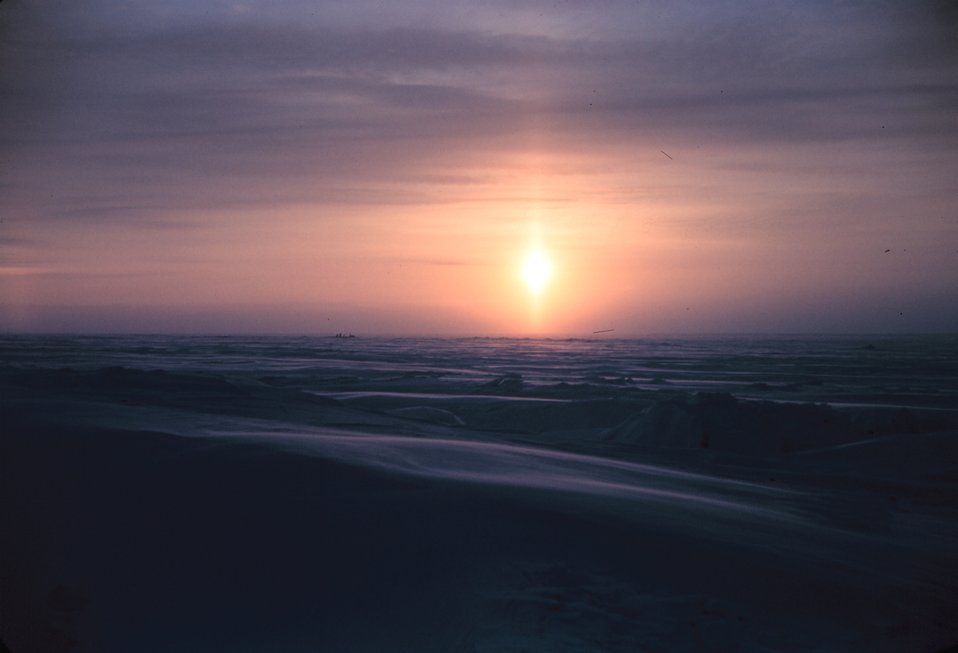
A sun pillar forms as the sun rises over the Arctic plain